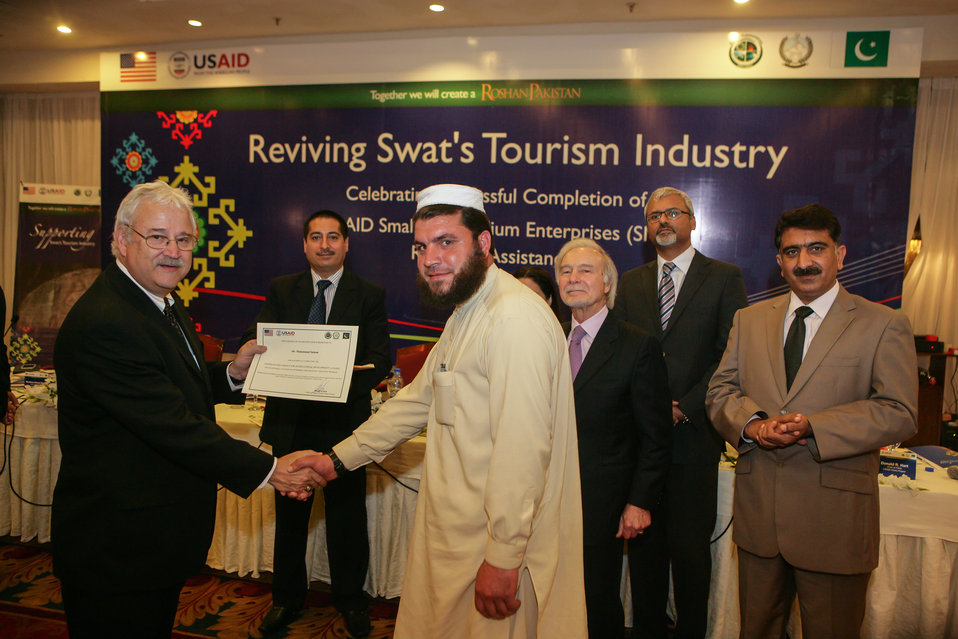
Graduation event of USAID Firms Project's Malakand Small and Medium Enterprises (SME) Recovery Assistance Program

Mr. Alan Davis, Director Economic Growth and Agriculture, distributed Certificate of Achievement among the business owners for successfully completing the grants program in hotel and fisheries sectors.